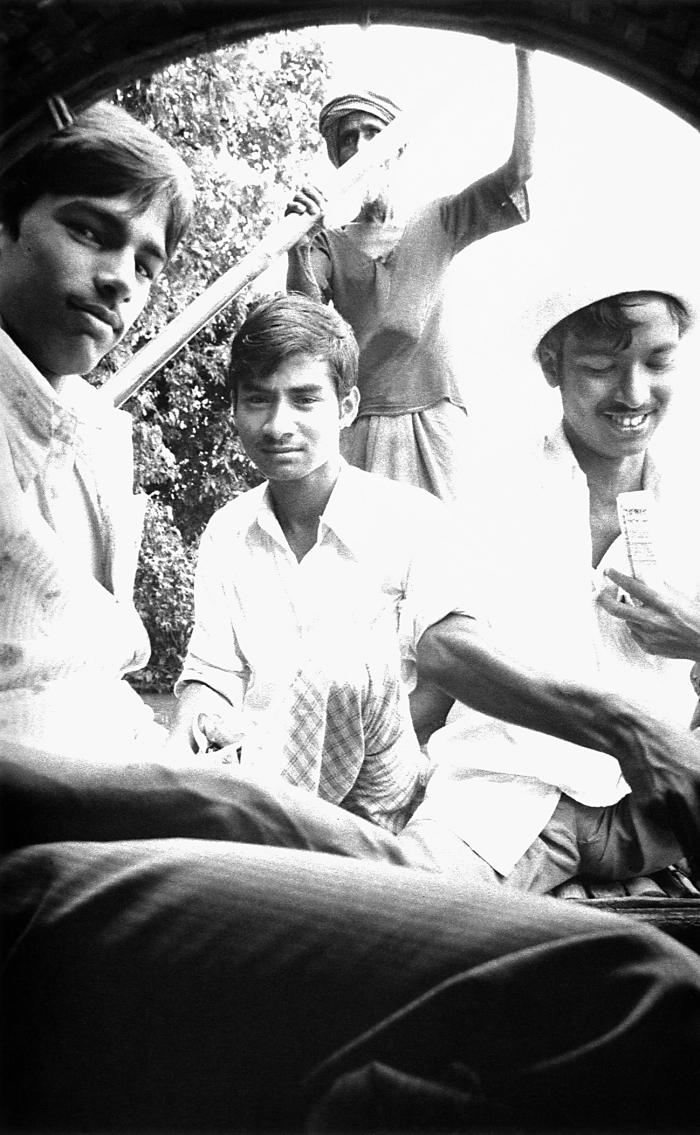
Seated on the right next to two fellow passengers, this Bangladesh volunteer smallpox eradication team vaccinator was traveling by river boat to his next destination, while in search of any possible smallpox cases on his designated route. The 'searchers' would use whatever modes of travel were available in order to complete their journeys from village to village. This pole-driven riverboat was, but one water craft available. There were also motor powered boats known as 'river taxis', which were able to transport more passengers. The Bangladesh riverine culture made these modes of transport integral to the daily lives of most villagers.